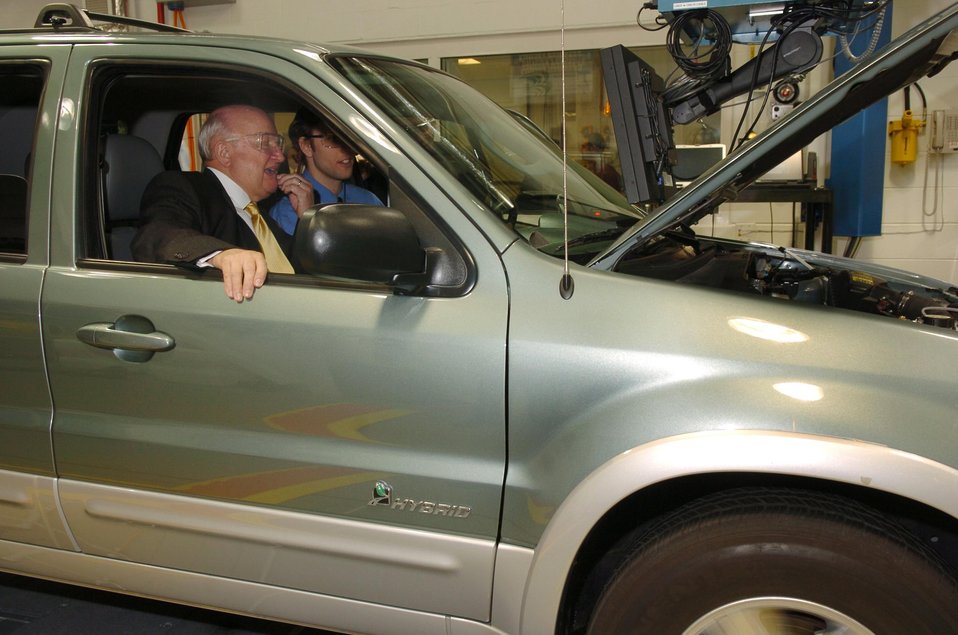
SECRETARY OF ENERGY BODMAN WITH ARGONNE MECHANICAL ENGINEER MIKE DUOBA IN A FORD HYBRID ESCAPE.

THE SECRETARY RODE IN THE FORD HYBIRD ESCAPE WHILE MR. DOUBA RAN THE TRUCK ON ARGONNE'S FOUR-WHEEL-DRIVE DYNAMOMETER. THROUGHOUT THE DRIVE, DETAILS OF THE VEHICLE'S HYBRID OPERATION COULD BE OBSERVED IN REAL TIME ON A MONITOR AS ENGINE EMISSIONS AND FUEL ECONOMY DATA WERE COLLECTED. ARGONNE'S ADVANCED POWERTRAIN RESEARCH FACILITY IS THE NATION'S PREMIER HYBRID VEHICLE TEST LABORATORY.